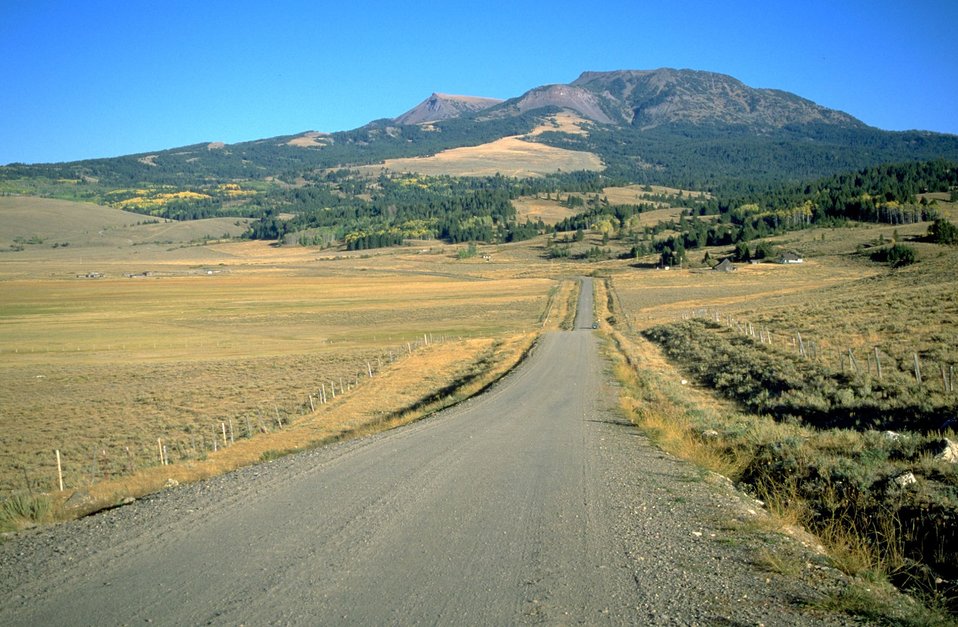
Gravel road through the Centennial Valley with Baldy Mountain/Centennial Range in the background